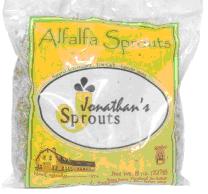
RECALLED - Sprouts

April 19, 2011 - Product Recall - Jonathans Sprouts Recalls Alfalfa Sprouts Because Of Possible Health Risk.